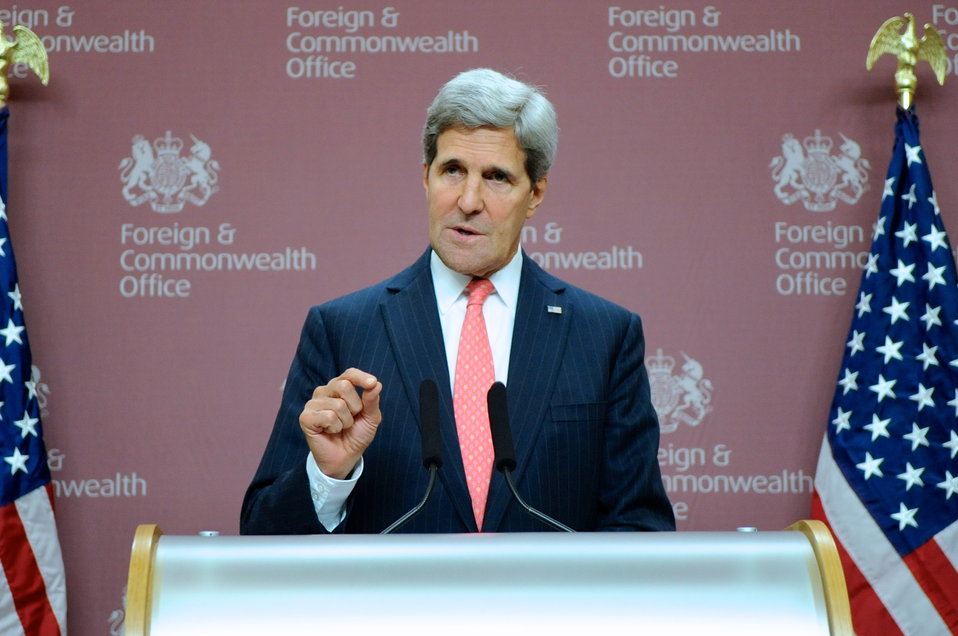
Secretary Kerry Addresses Reporters in London

U.S. Secretary of State John Kerry addresses reporters after the London 11 ministerial meeting on Syria in London, United Kingdom, on October 22, 2013.